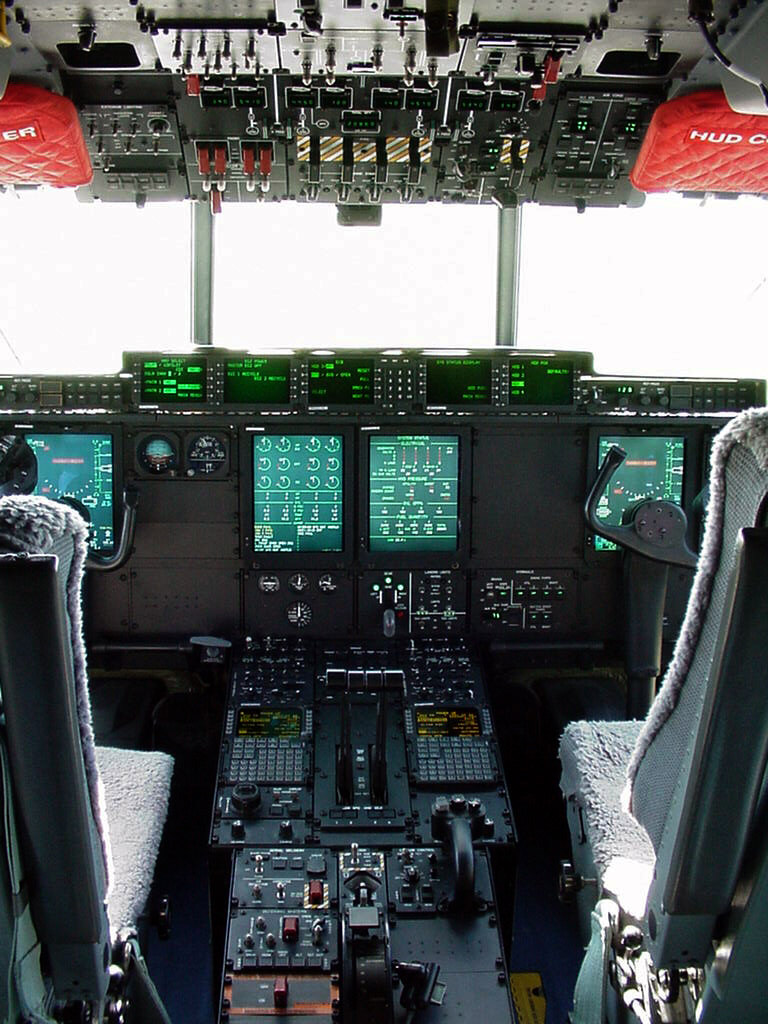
Hurricane Hunters track down Alberto

The WC-130J Hercules features a cockpit packed with the latest in computer assisted flight and navigational controls used to